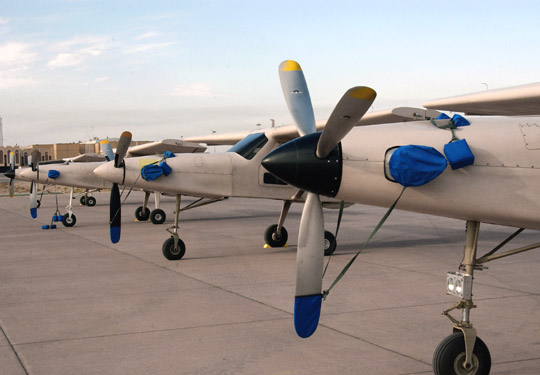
Five Airmen confirmed dead in Iraqi aircraft crash

FILE PHOTO -- An Iraqi air force Comp Air 7SL aircraft like those here crashed May 30 in eastern Diyala province of Iraq during an operational mission. The crash killed four U.S. Airmen and one Iraqi.